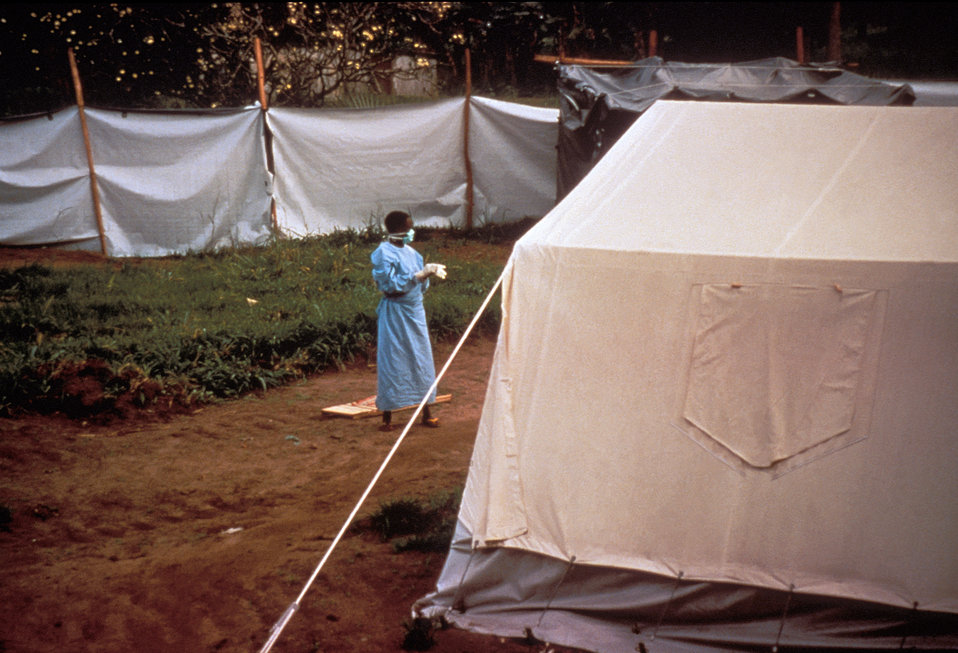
These temporary screens and tents were erected on the grounds of the Kikwit General Hospital, located in Kikwit, Zaire, 1995.